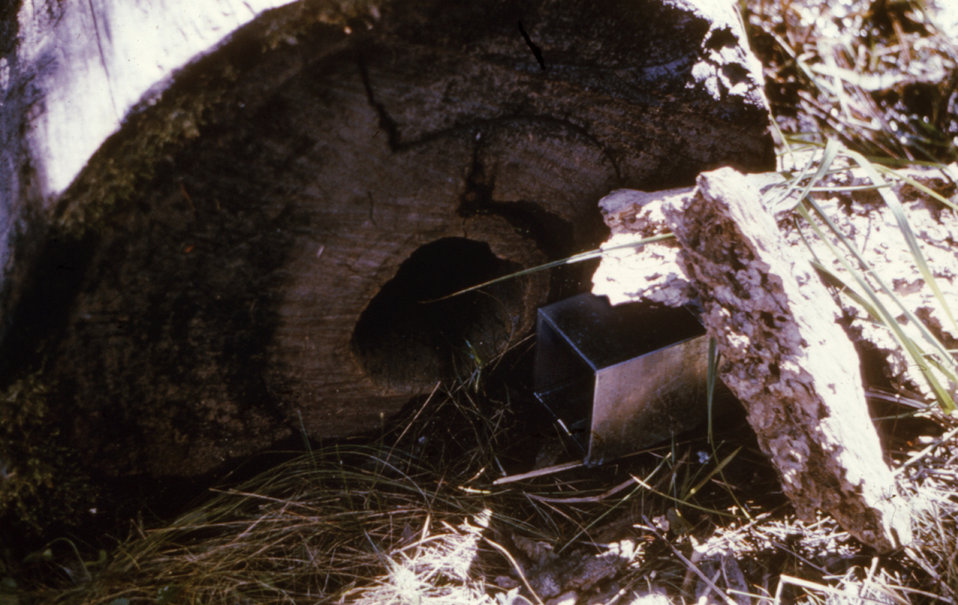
This Sherman Trap� was set alongside a log in order to trap animals that were subsequently tested for arboviruses.